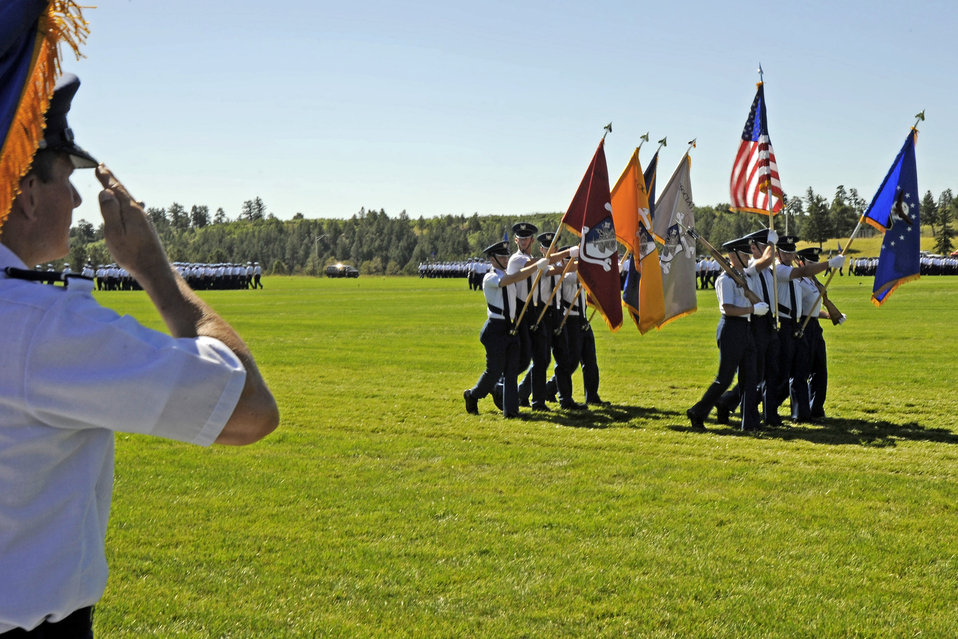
Academy acceptance parade

Lt. Gen. Michael C. Gould salutes the colors during the Acceptance Parade Aug. 5 at the U.S. Air Force Academy in Colorado. The parade marks the official end of Basic Cadet Training and formally welcomes the new class into the cadet wing. General Gould is the Academy superintendent.